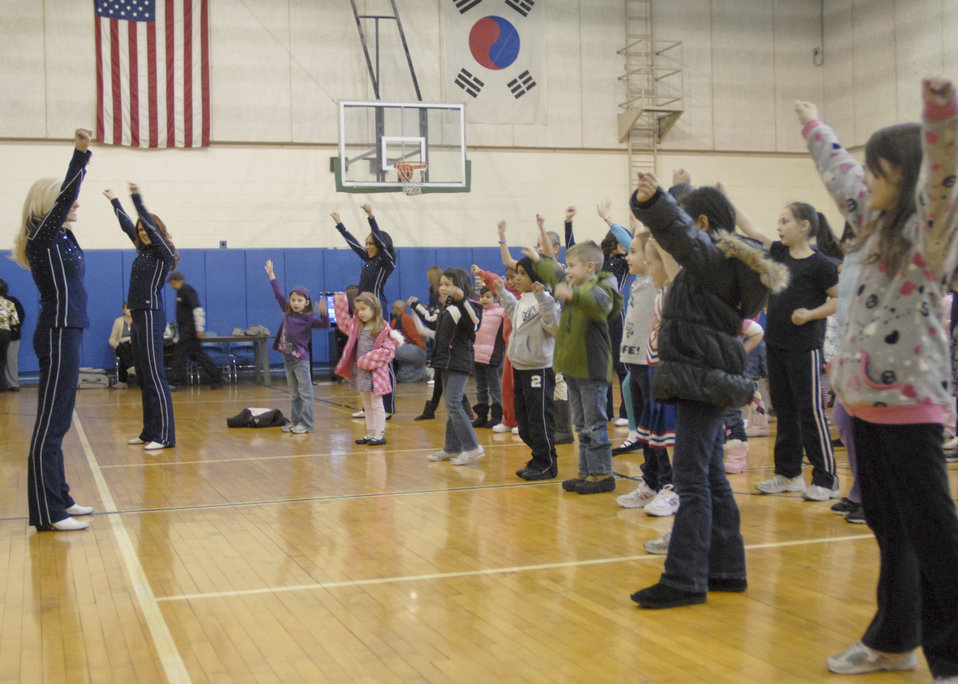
Dallas Cowboys cheerleaders participate in a free cheer clinic for family members Dec. 29, 2010, during a visit to Osan Air Base, South Korea.